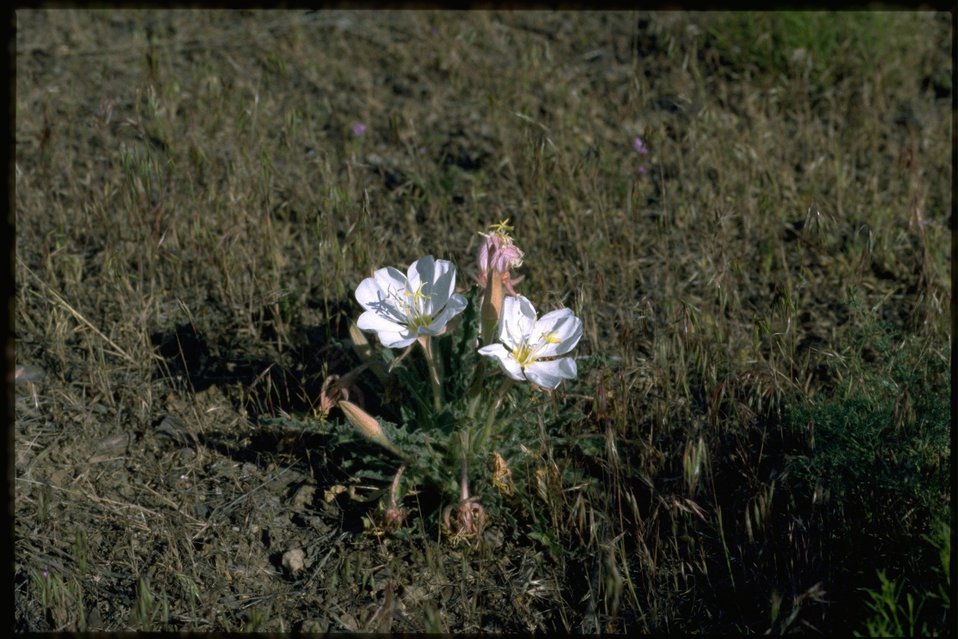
Farshot of Oenothera.